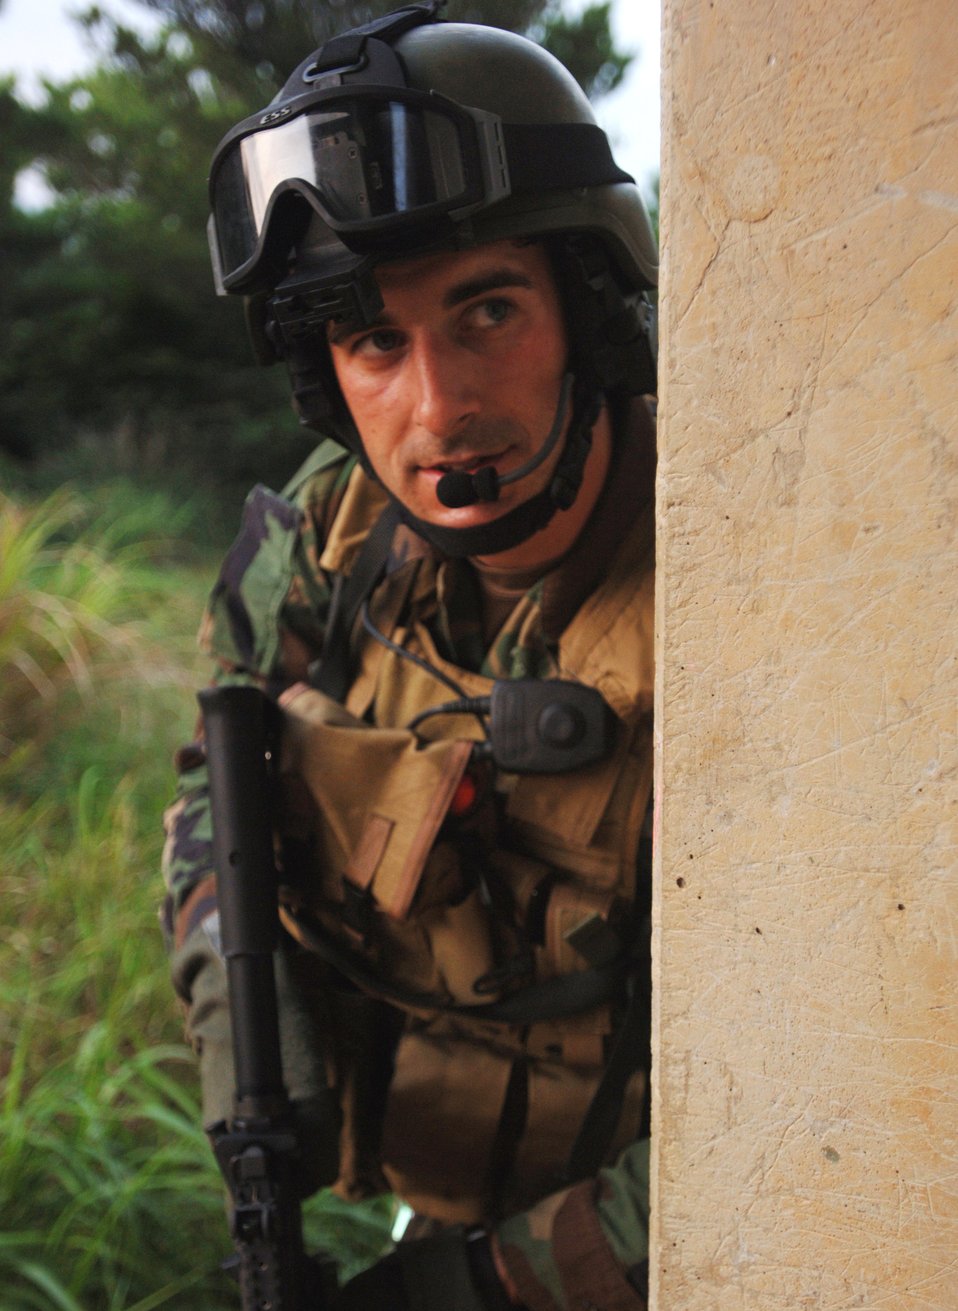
KADENA AIR BASE, Japan -- Senior Airman Jonathan Courtright keeps an eye on